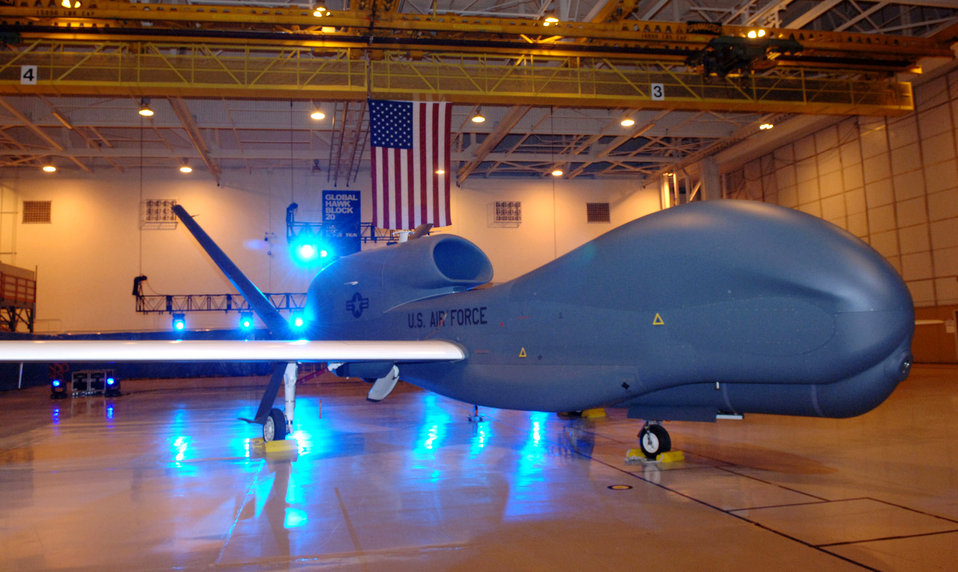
ESC officials award contract to meet urgent need

The Global Hawk Block 20, seen here in a hangar in Palmdale, Calif., will receive the Battlefield Airborne Communications Node as a result of an Air Force contract awarded June 24. The contract, let by the Electronic Systems Center at Hanscom Air Force Base, Mass., also calls for first outfitting two BD-700 business jets with the Battlefield Airborne Communications Node, meeting a joint urgent operational need.